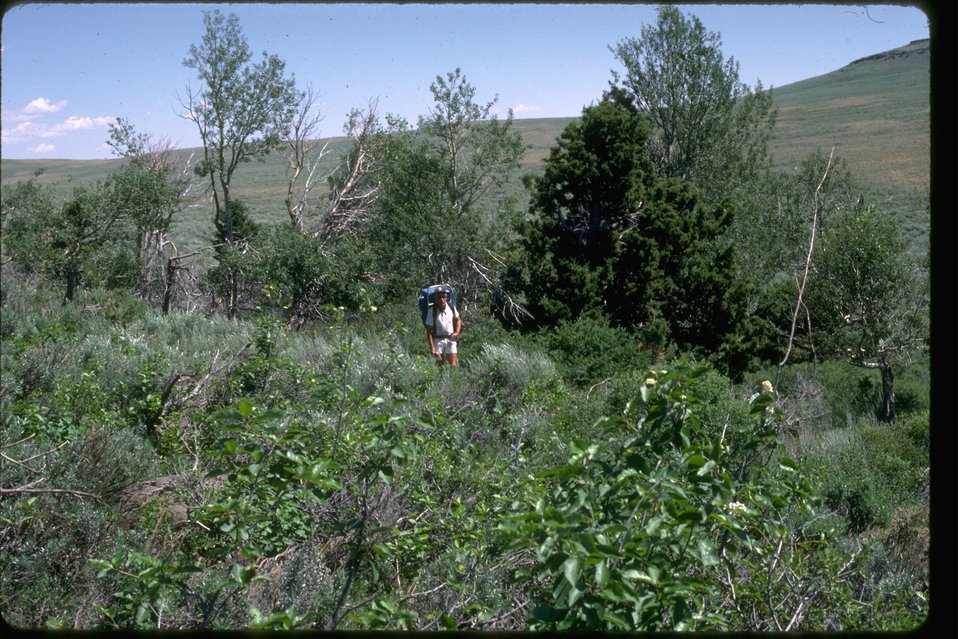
Backpacking in the brush of Stonehouse Canyon. OR 2-23